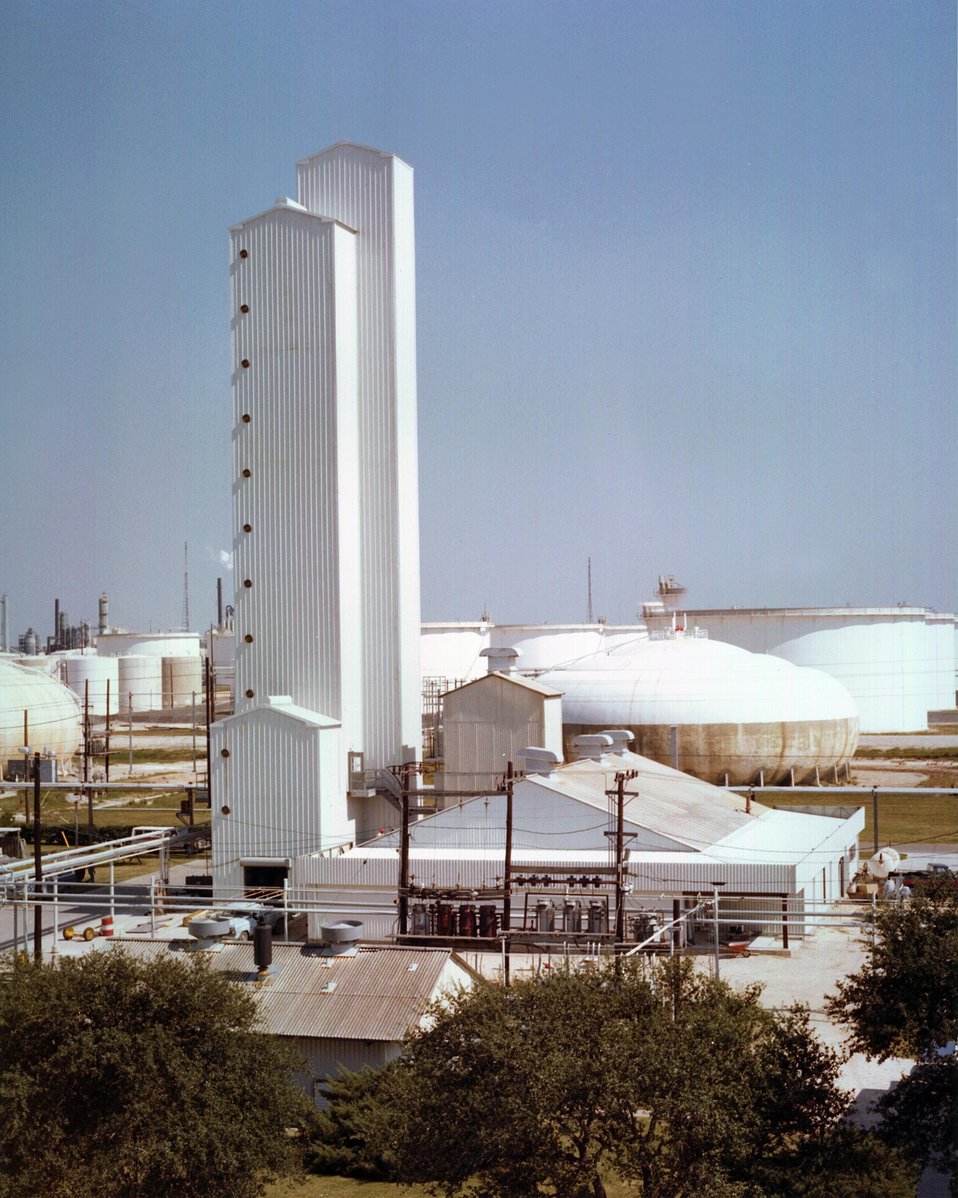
OVERALL VIEW OF THE CATALYTIC COAL GASIFICATION PROCESS DEVELOPMENT UNIT UNDER CONSTRUCTION.

THE CATALYTIC COAL GASIFICATION PROCESS IS BEING DEVELOPED IN A JOINT DOE/EXXON PROJECT AT EXXON'S RESEARCH FACILITIES IN BAYTOWN, TEXAS. UNLIKE OTHER COAL GASIFICATION PROCESSES WHICH RELY ON HIGH TEMPERATURES TO MAKE THE COAL REACT WITH STEAM, THE EXXON PROCESS USES A CHEMICAL CATALYST TO SPEED THE REACTION. THIS PROCESSING TECHNIQUE ELIMINATES THE NEED FOR OXYGEN, AN EXPENSIVE RAW MATERIAL NEEDED BY OTHER PRO- CESSES TO GENERATE THE NECESSARY HEAT. INSTEAD, THE HEAT RELEASED BY THE FORMATION OF THE SYNTHETIC GAS PROVIDES THE ENERGY FOR THE CARBON-STEAM REACTION. AN ADDITIONAL ADVANTAGE OF THE CATALYTIC PROCESS IS THAT THE GAS CAN BE RECYCLED CONTINUOUSLY UNTIL IT IS OF HIGH ENOUGH QUALITY TO BE INTRODUCED DIRECTLY INTO PIPELINES WITHOUT FURTHER UPGRADING. MINIMIZING THE DOWNSTREAM EQUIPMENT NEEDED BY OTHER PROCESSES TO MAKE THE GAS SUITABLE FOR PIPELINE TRANSPORT.